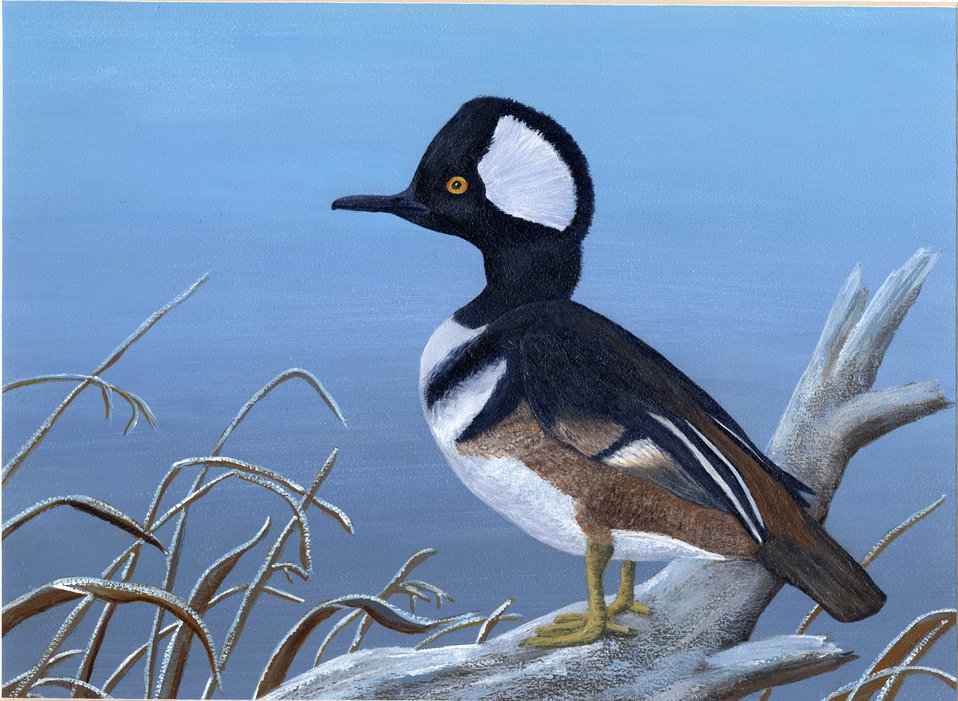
NorthCarolina

2012 Jr Duck Stamp Program
State Best of Show
North Carolina